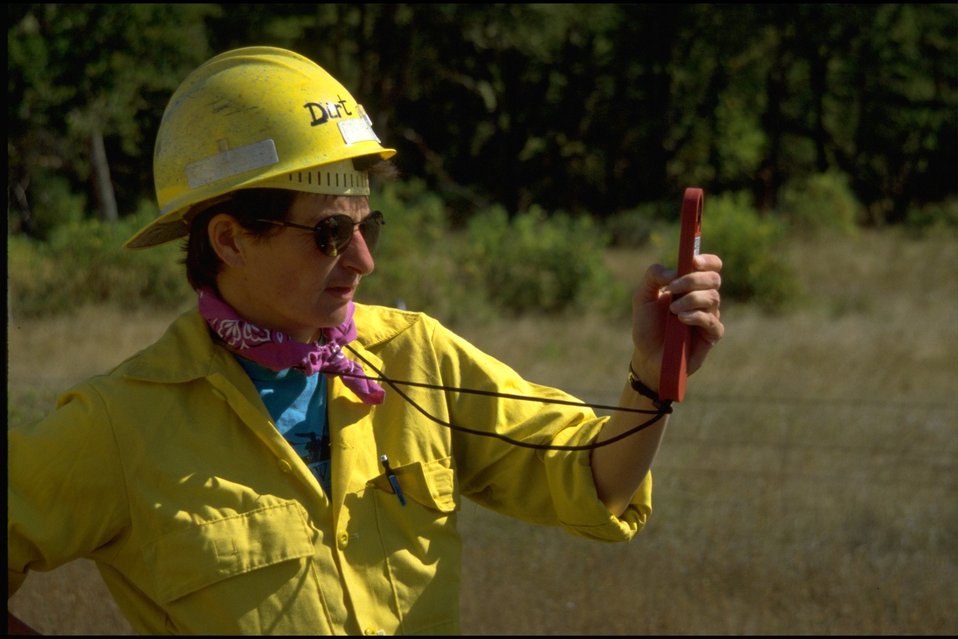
Long Tom ACEC burn (Rudy Wiedenbeck).